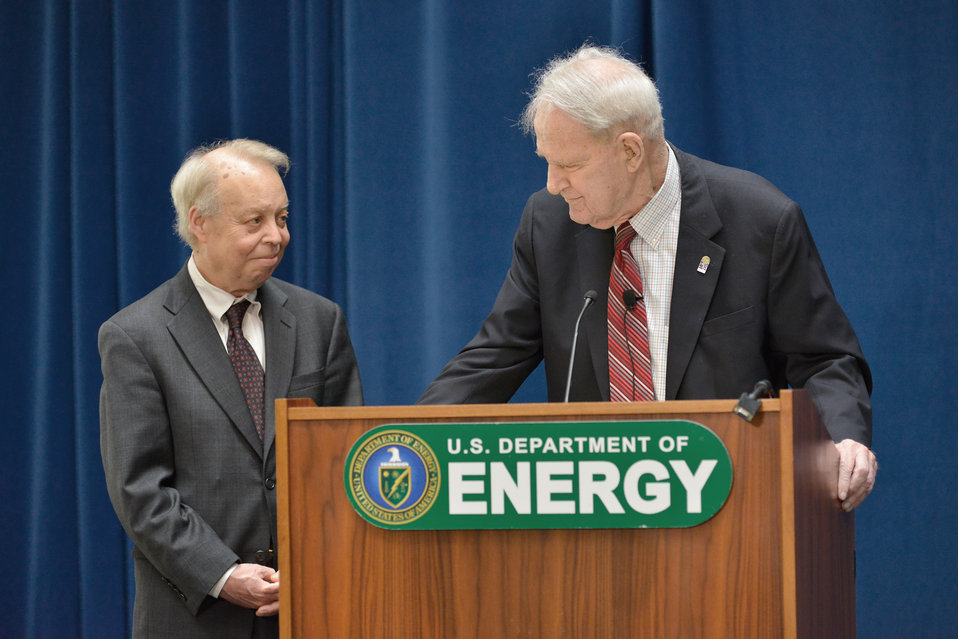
Schlesinger and Fygi

James R. Schlesinger, first Secretary of Energy, presents the James R. Schlesinger Honors Award to Eric Fygi at the 35th Anniversary and Honors Awards ceremony on October 4, 2012.